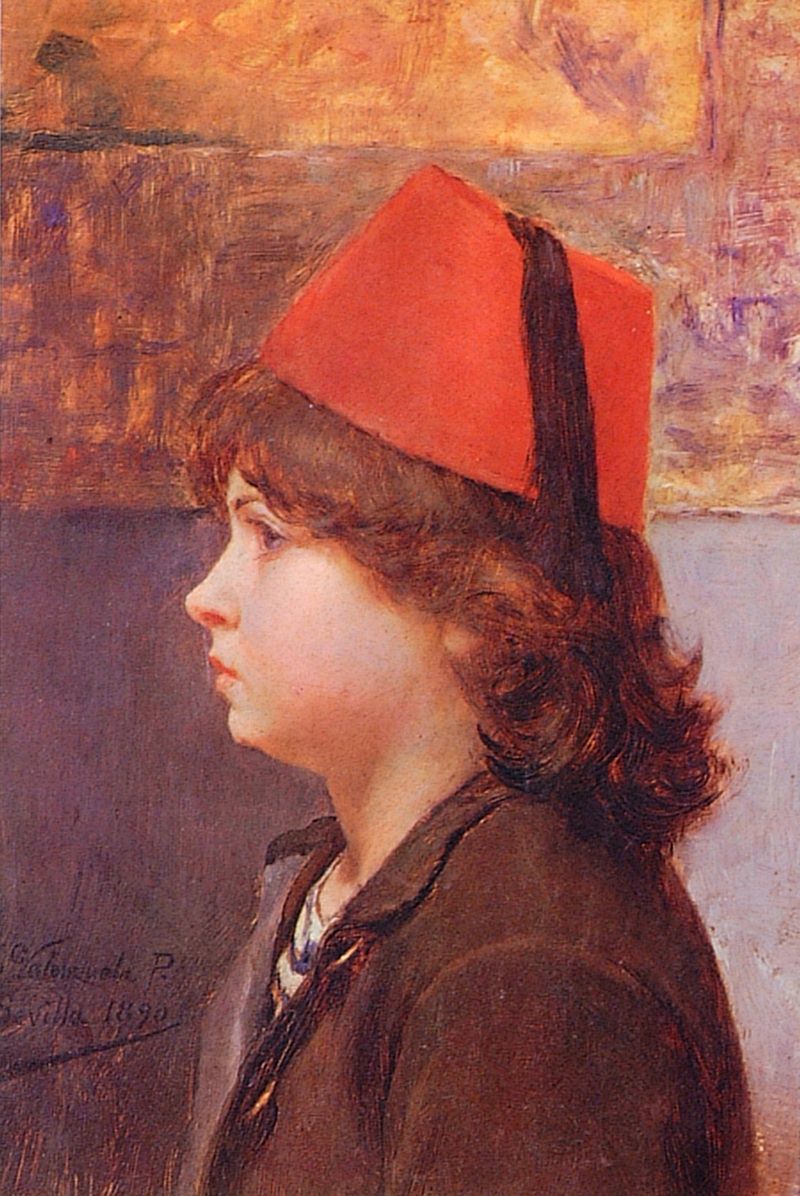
Espa√±ol: retrato de ni√±o